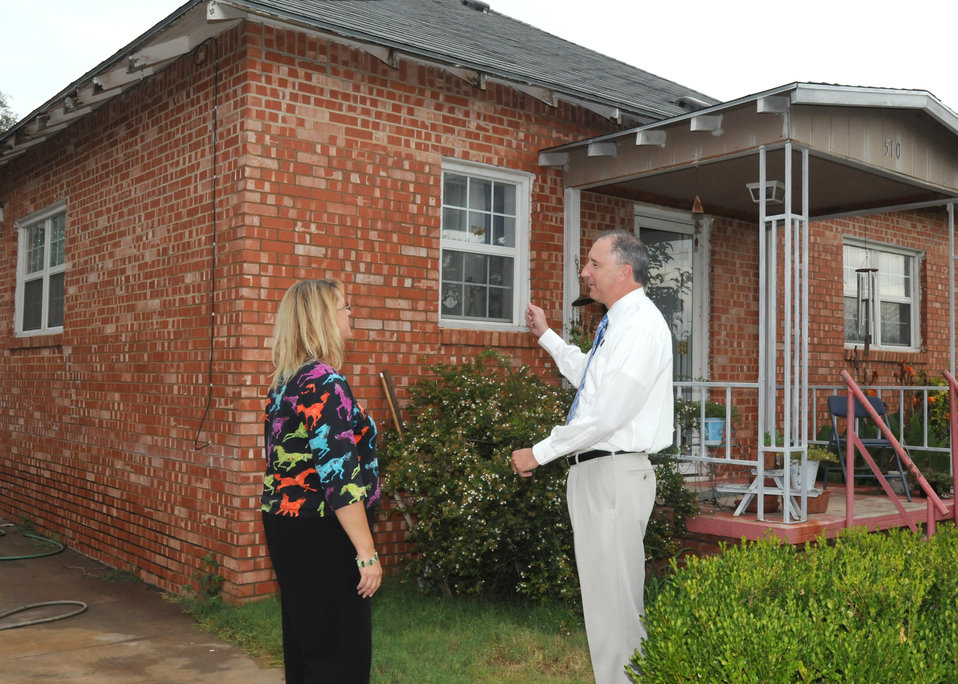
U.S. Department of Agriculture (USDA) Rural Development (RD) agent Shelley Bookout and Rural Enterprises, Inc. representative Gilmer Capps, discuss the purchase of Ms. Shirley Ford's home and the structural/utility upgrades that were done on the home.